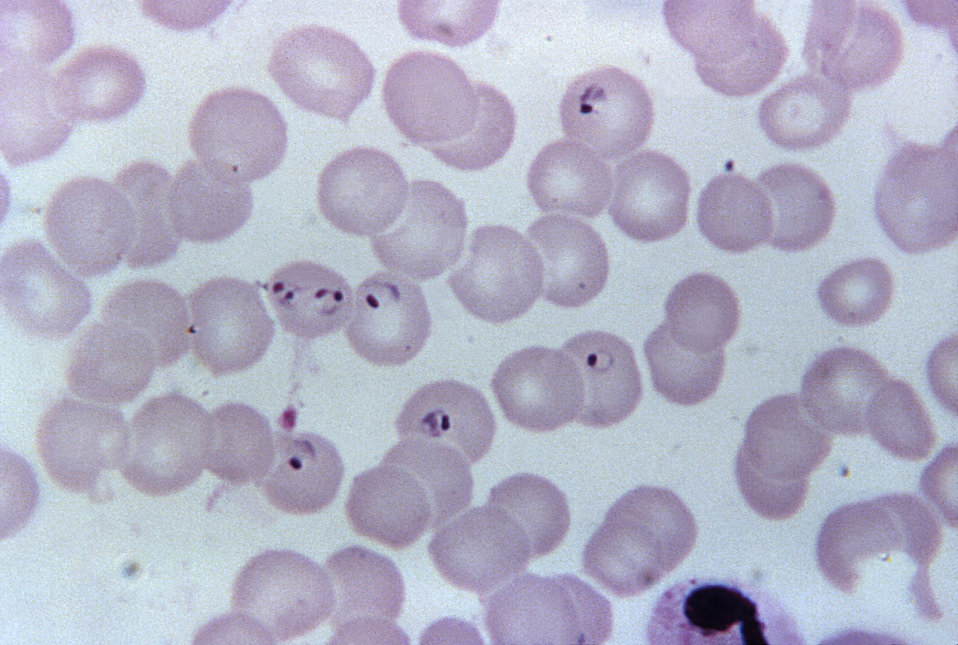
This thin film Giemsa stained micrograph reveals a ring-form Plasmodium falciparum trophozoite.